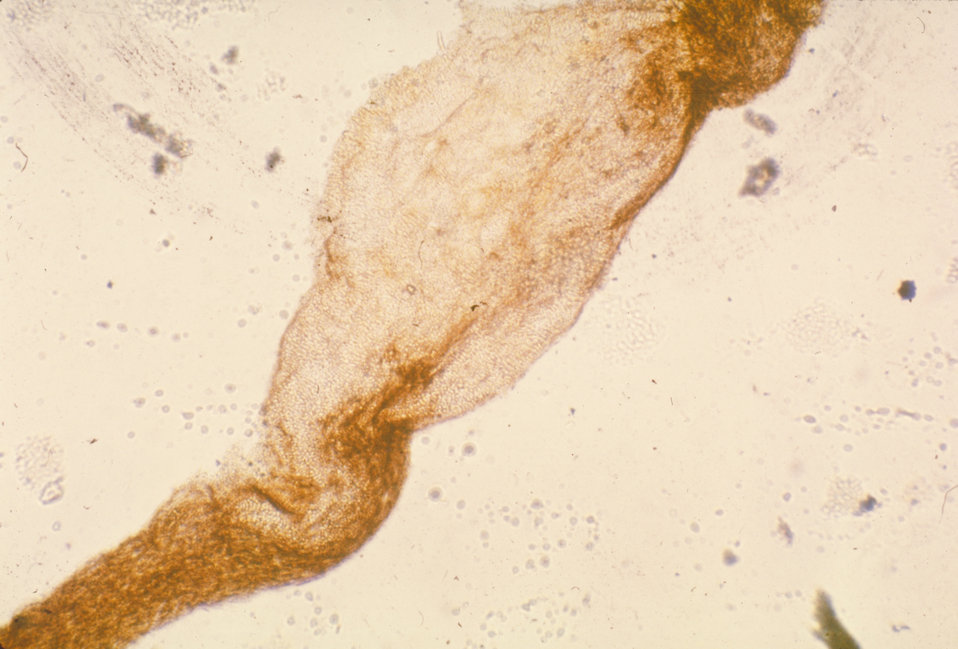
Photomicrograph revealing white piedra on a monkey hair caused by the fungus Trichosporon beigelii.